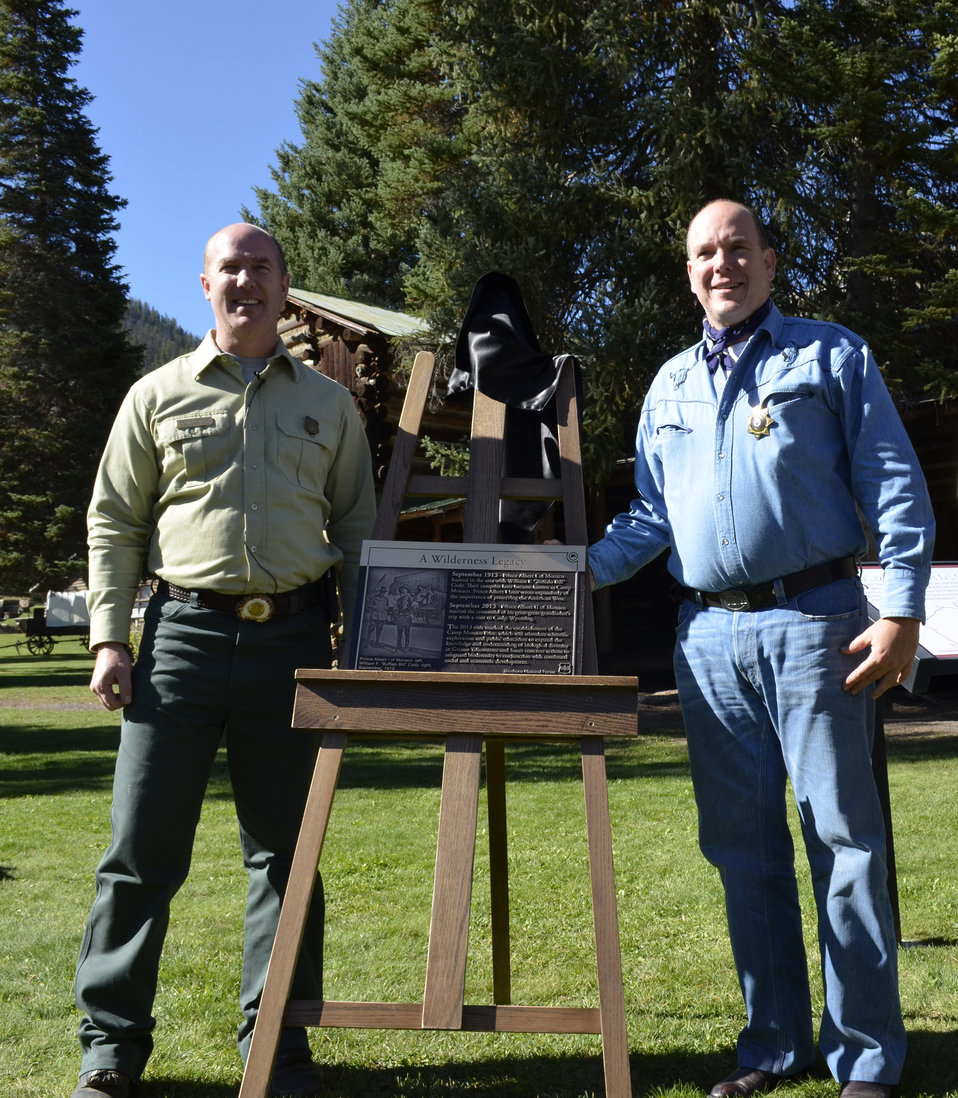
Prince Albert II and Joe Alexander

Shoshone Forest Supervisor Joe Alexander and His Serene Highness (HSH) Prince Albert II of Monaco stand by the plaque commemorating the Prince’s great-grandfather original trip and the centennial celebration ride at the Shoshone National Forest, WY on Sep. 20, 2013. HSH Prince Albert II of Monaco retraced the hunting trip his great-grandfather took 100 years ago with William “Buffalo Bill” Cody and the first Special Superintendent of Forest Reserves Abraham Archibald Anderson. The successful hunting trip cemented lasting relationships between the men and established an area in the Absaroka-Beartooth Wilderness, which is still known today as Camp Monaco.